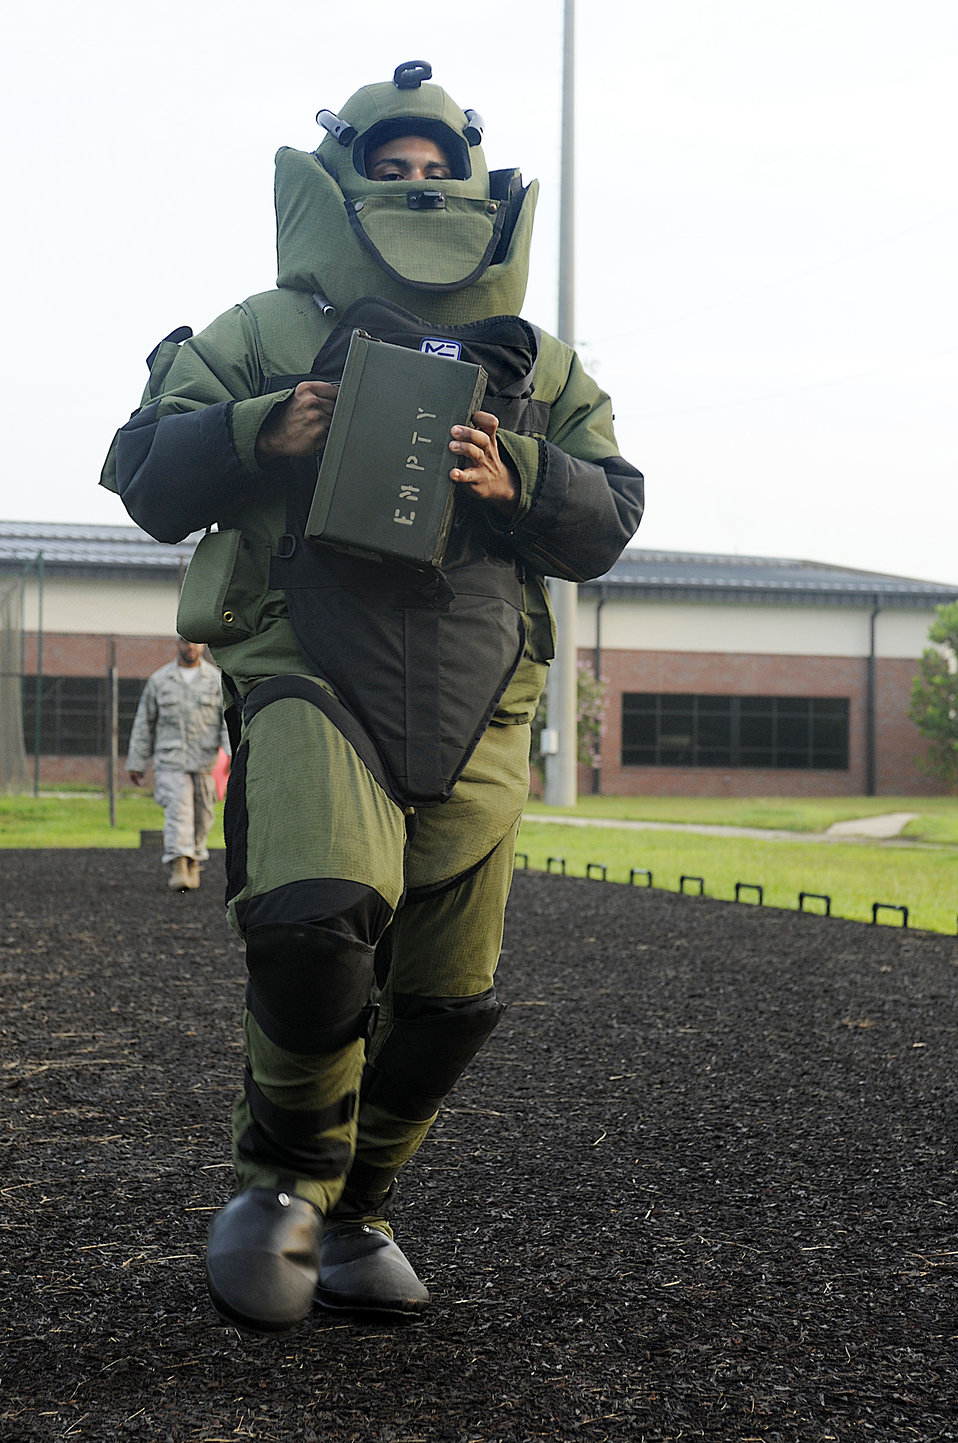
Steady hands needed

During the Commander's Challenge, Staff Sgt. Javier Parris runs in a bomb suit Aug. 7 at Charleston Air Force Base, S.C. Each Airman had to do 10 push-ups, sprint to an empty ammo box, carry the ammo box back and complete another set of 10 push-ups all while wearing the bomb suit. Sergeant Parris is a maintainer with the 1st Combat Camera Squadron.